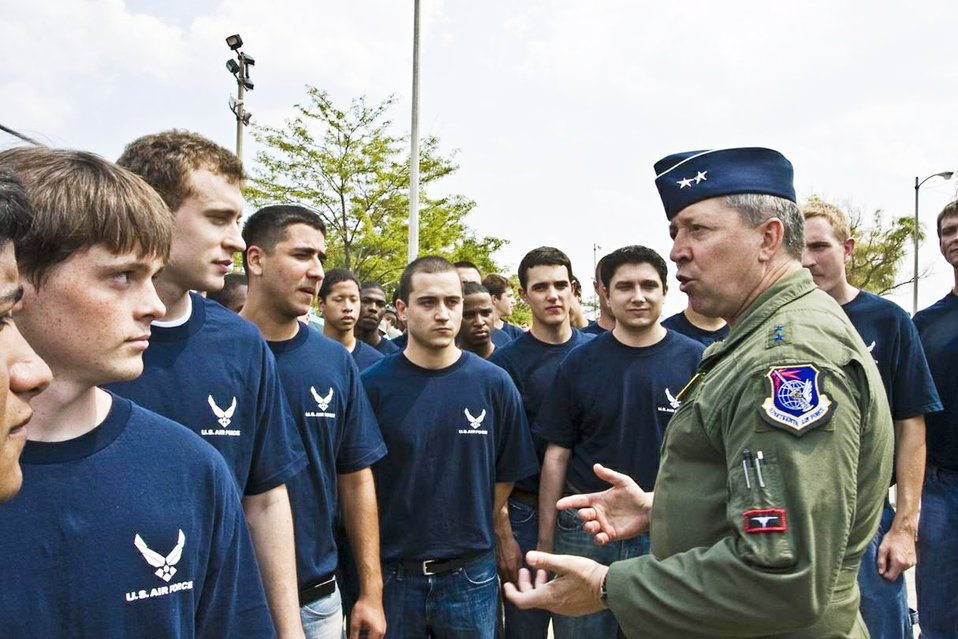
New recruits enlist at Chicago Air and Water Show

Recruits from the Chicago area listen as Maj. Gen. Gregory Feest, commander of Air Education and Training Command's 19th Air Force at Randolph Air Force Base, Texas, gives tips on achieving success in the Air Force. Following the chat, General Feest conducted the oath of enlistment ceremony with the recruits on the Chicago lakefront Aug 15 in front of thousands of spectators attending the 51st Chicago Air and Water Show.